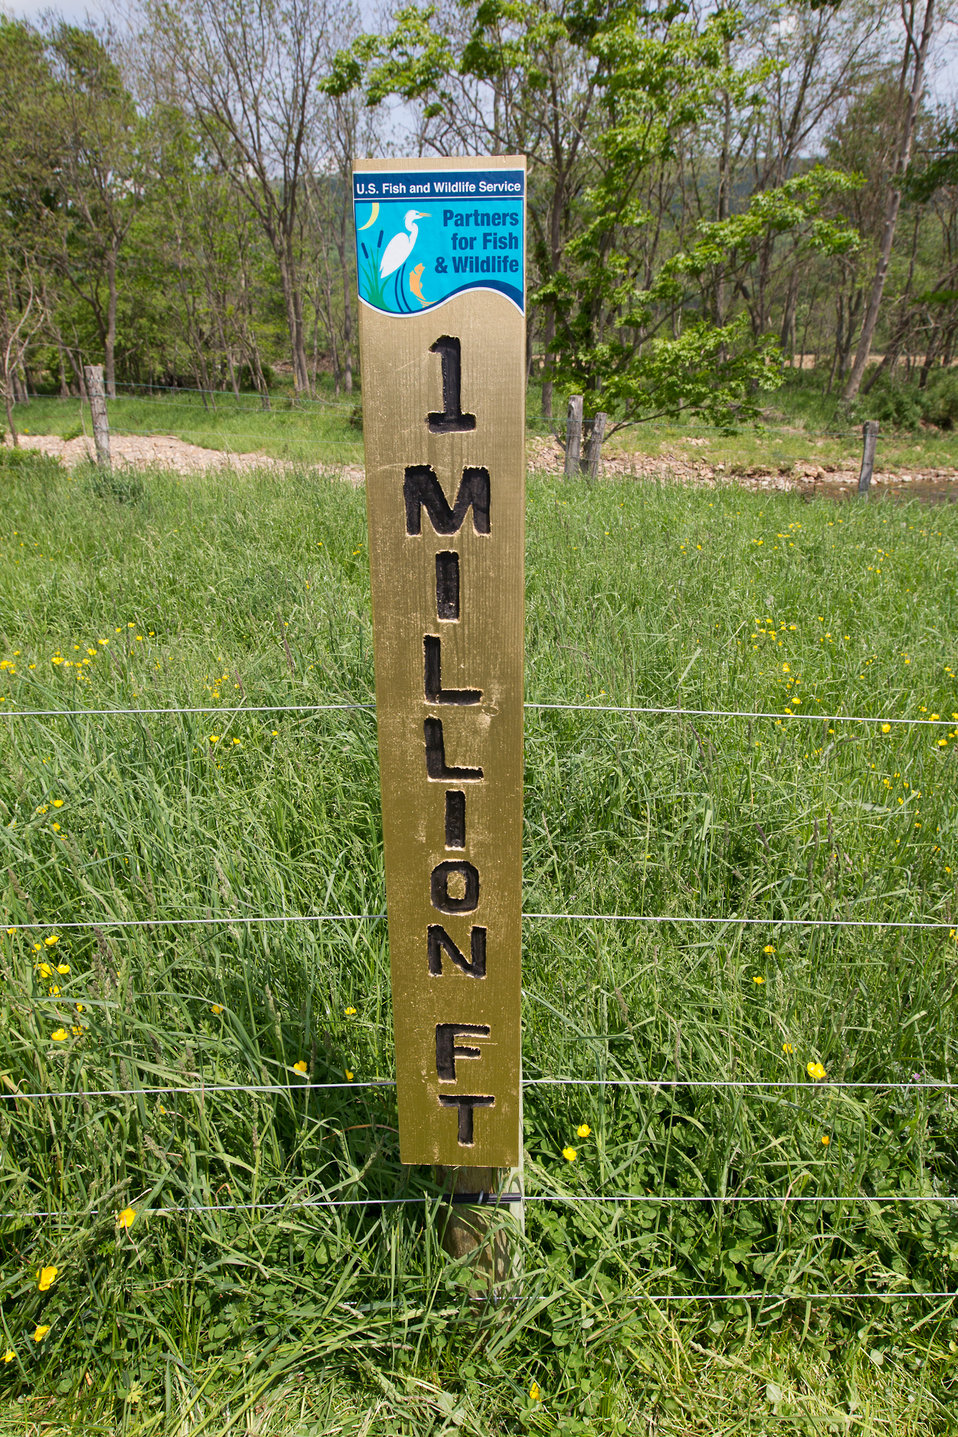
Celebrating 1 Million Feet of Conservation Fence in WV

Partners for Fish and Wildlife Program